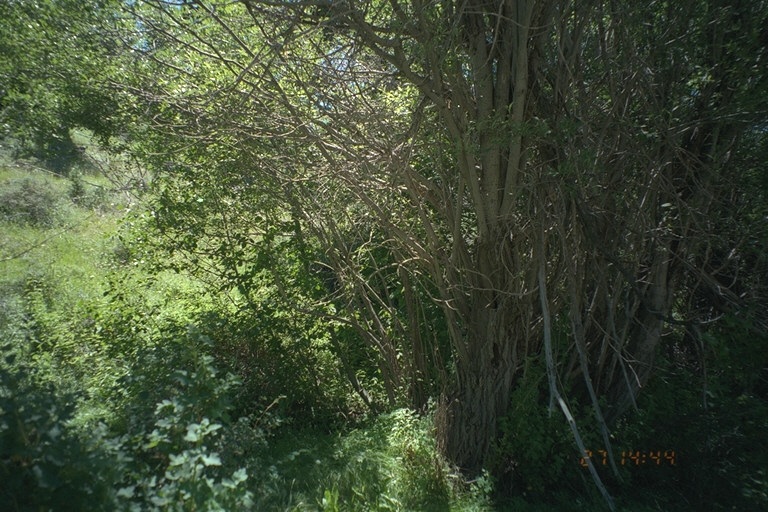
Riparian area Public Lands Salmon Field Office UCSC Upper Columbia Salmon Clearwater District